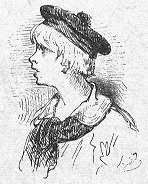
An illustration from Jules Verne's novel 'Journeys and Adventures of Captain Hatteras', part I: 'The English at the Noth Pole' drawn by Édouard Riou and/or Henri de Montaut. Polski: Ilustracja powieści Juliusza Verne'a 'Podróże i przygody kapitana Hatterasa', części I: 'Anglicy na Biegunie Północnym' autorstwa Édouarda Riou i/lub Henri de Montauta. Français : Jules Verne: 'Voyages et aventures du capitaine Hatteras - Les Anglais au Pôle Nord', Édouard Riou et Henri de Montaut.